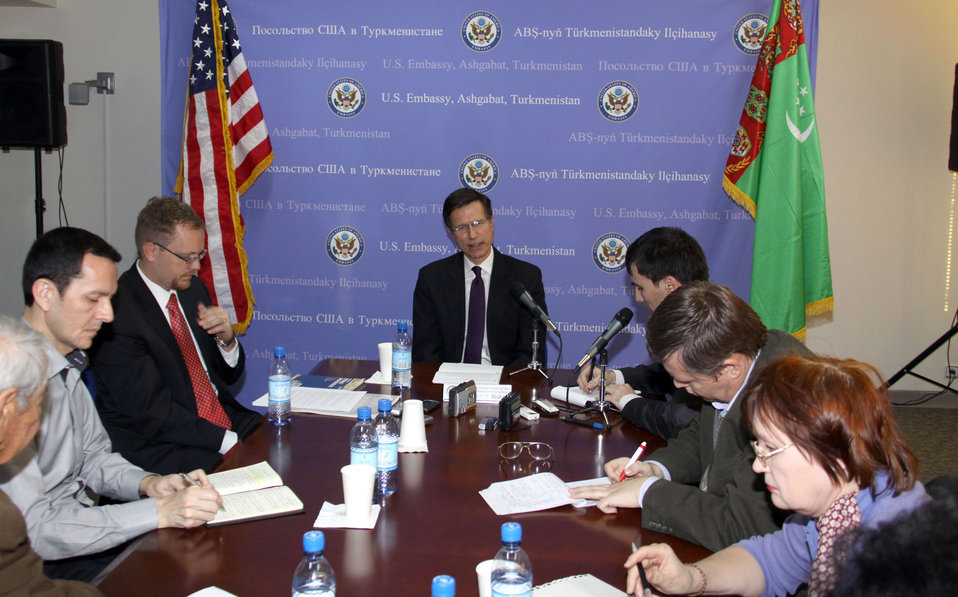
Assistant Secretary Blake Holds a Press Conference

Assistant Secretary of State for South and Central Asian Affairs Robert O. Blake holds a press conference following the U.S.-Turkmenistan Business Council at the U.S. Embassy Ashgabat, Turkmenistan, on February 16, 2011.